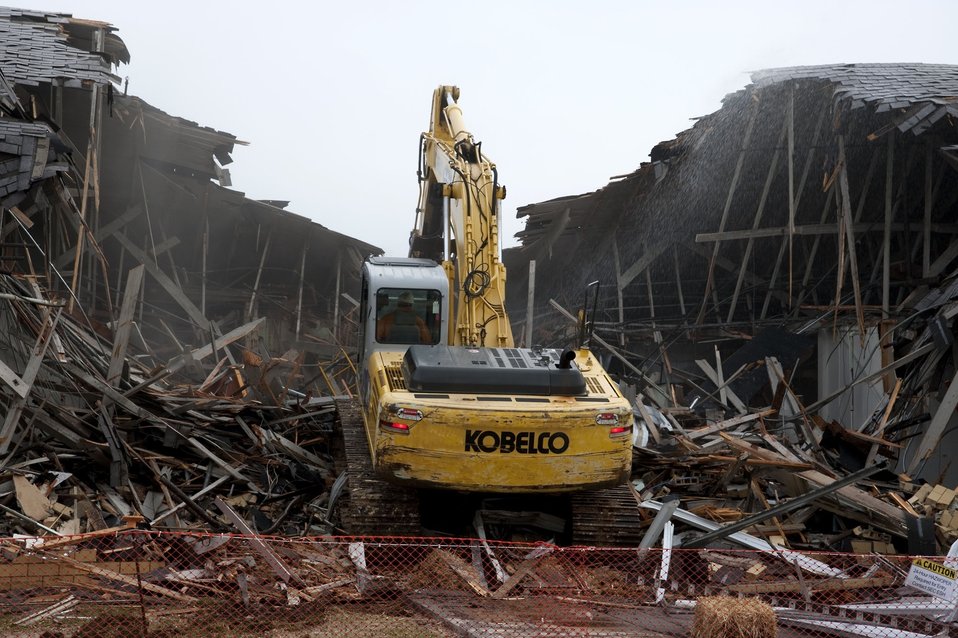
First ARRA-Funded Demolition Takes Down Last Building in “Engineering Row”

It’s not often one project represents both a first and a last milestone, but this week the demolition of Building 9735 at Y-12 National Security Complex did just that.

The demolition of Building 9735, the first Y‑12 demolition project funded by the American Recovery and Reinvestment Act (ARRA), started Monday, Feb. 8, and was completed the same day.

“The waste will be disposed of in the coming weeks, and the entire project will be completed four months ahead of schedule,” said Jim Blair, B&W Y-12’s project manager for ARRA deactivation and demolition (D&D) projects at the site.